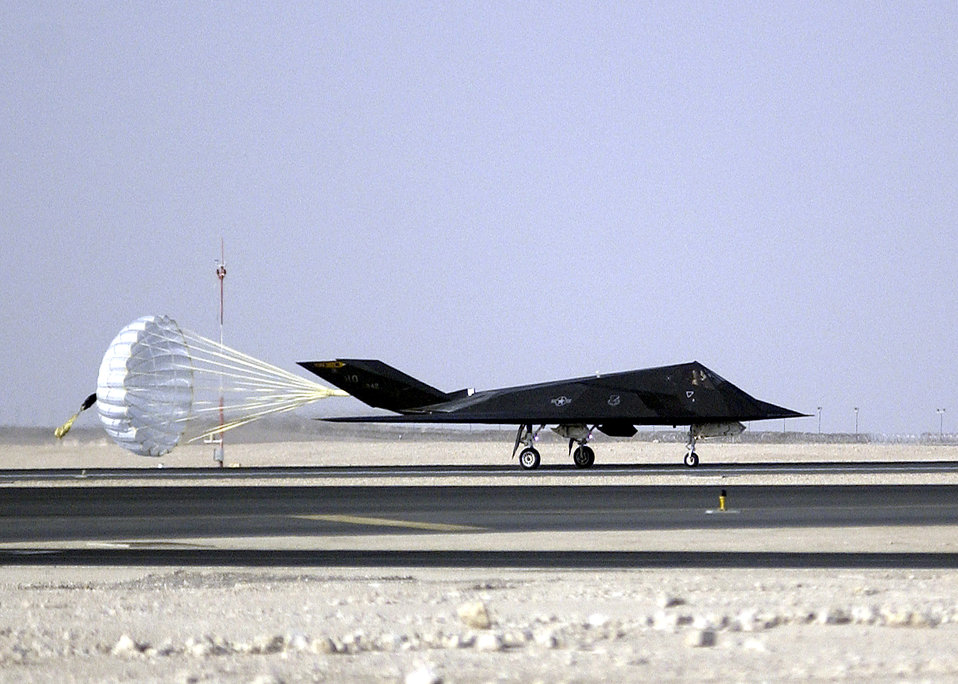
F-117 first strike

An F-117 Nighthawk from the 8th Expeditionary Fighter Squadron lands at an airfield in the Arabian Gulf region after completing the opening air-strike mission of Operation Iraqi Freedom on March 20, 2003. The stealth fighter was one of two F-117s that each struck a command bunker with two 2,000-pound bombs in the early morning. Cruise-missile attacks and the start of massive air operations with thousands of sorties a day followed this opening strike. By May 2, major combat was over and the stabilization phase of the operation began.